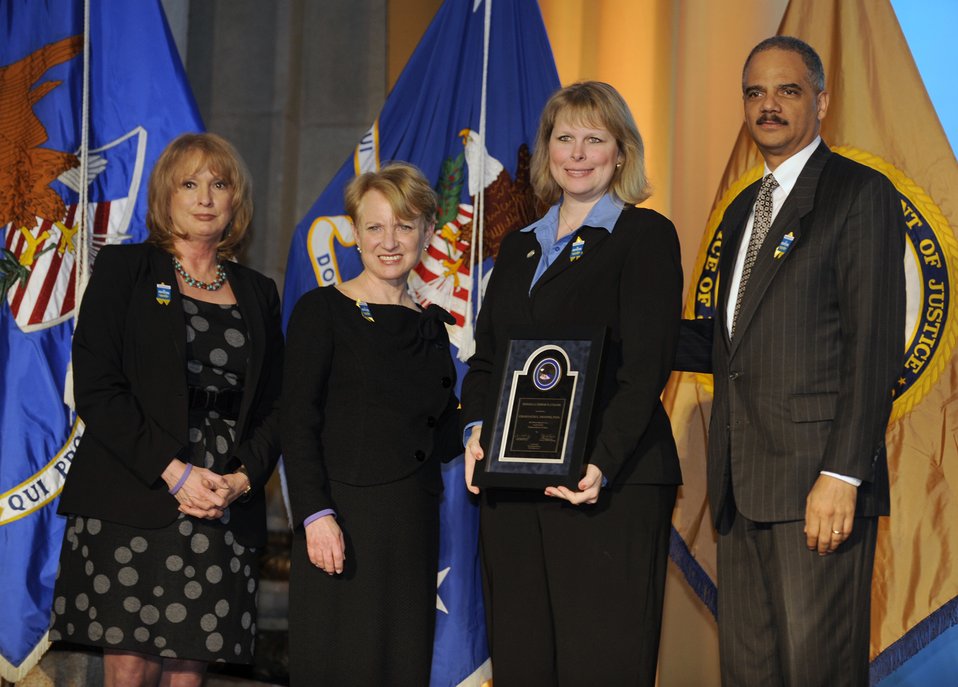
Federal Service Award

Dr. Charlotte Moerbe (second from right), the Joint Base San Antonio sexual assault response coordinator, receives a Federal Service Award during the National Crime Victims' Service Awards ceremony April 8, 2011, in Washington, D.C. Dr. Moerbe was recognized for her work supporting military members recovering from sexual violence. She is joined by (from left) Joye E. Frost, acting director of the Office for Victims of Crime; Laurie O. Robinson, Assistant Attorney General, Office of Justice Programs; and Attorney General Eric Holder.